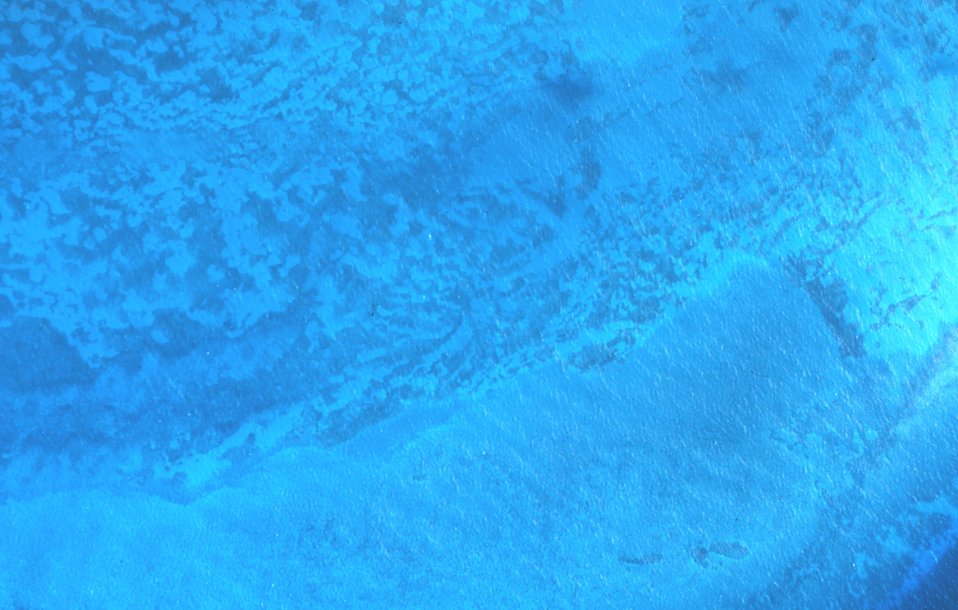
Aerial view of patterns in a coral reef.